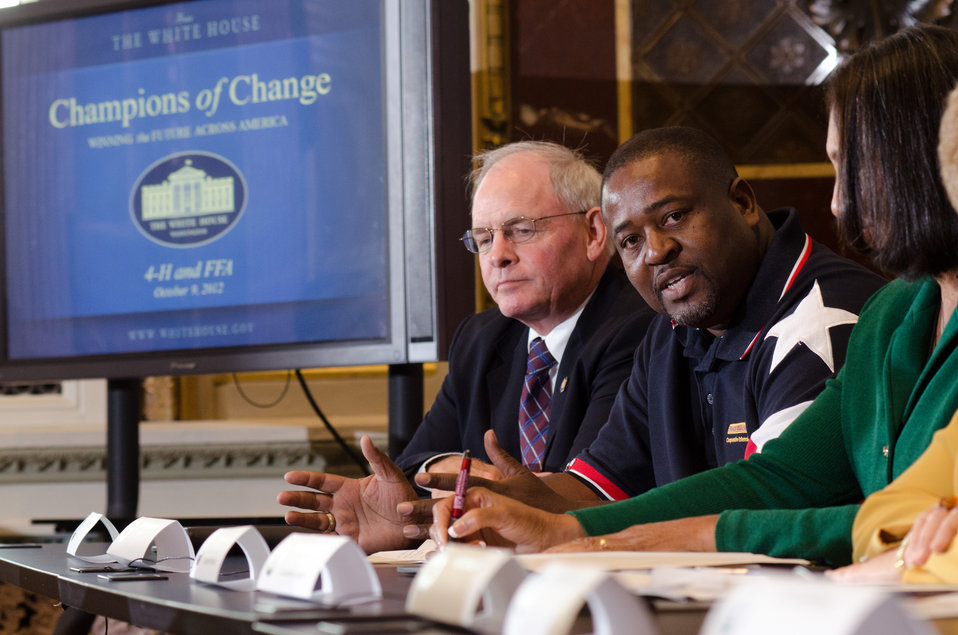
Texas A&M University Cooperative Extension Program 4-H & Youth Development Prairie View Program Specialist, Dr. Samuel G. Roberson Sr. speaks at the Champions of Change Recognition event in the Indian Treaty Room at the Executive Office Building in Washington, D.C. on Tuesday, Oct. 9, 2012. The Champions of Change program was created to honor ordinary Americans doing great work in their communities. Each week, a different sector is highlighted and groups of Champions, ranging from educators to entrepreneurs to community leaders, are recognized for the work they are doing to serve and strengthen their communities.